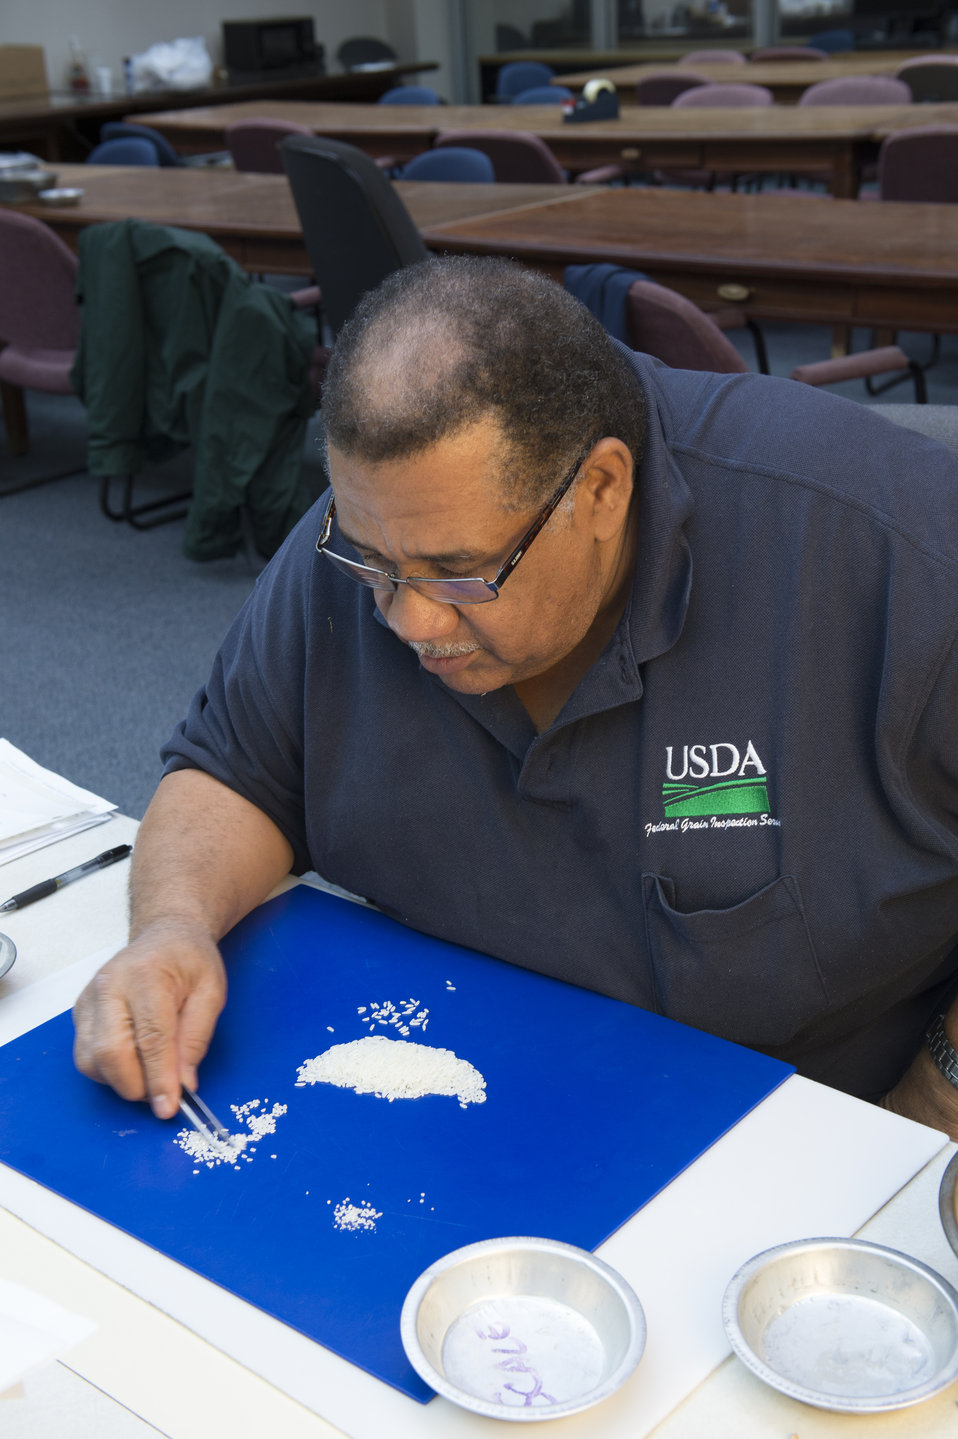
U.S. Department of Agriculture (USDA) Grain Inspection, Packers and Stockyards Administration (GIPSA) Federal Grain Inspection Service (FGIS) employee examines rice samples at the FGIS inspection laboratory in New Orleans, LA on Monday, Nov. 18, 2013.